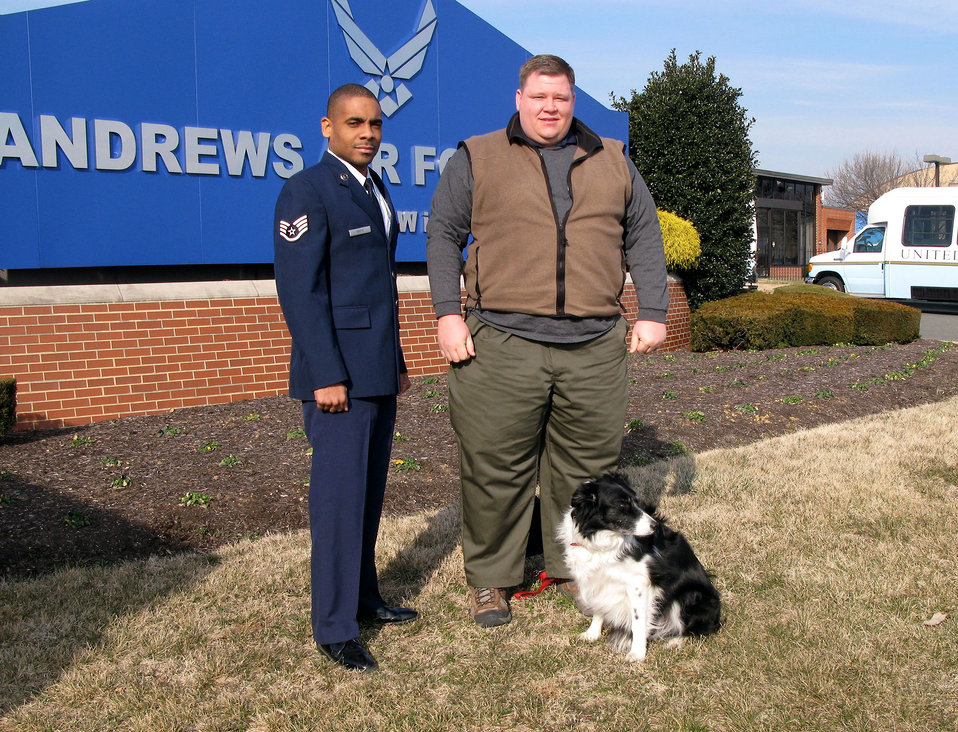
Air Force Works Aggressively to Reduce Bird Strikes

Staff Sgt. Paul White, airfield operations supervisor at Andrews Air Force Base, Md., left, and Dan Vredenburgh, a contractor who oversees the base's Bird/Wildlife Aircraft Strike Hazard program, rely on Bree, a two-tone border collie, as one of many tools to discourage birds and wildlife that could interfere with airfield operations.